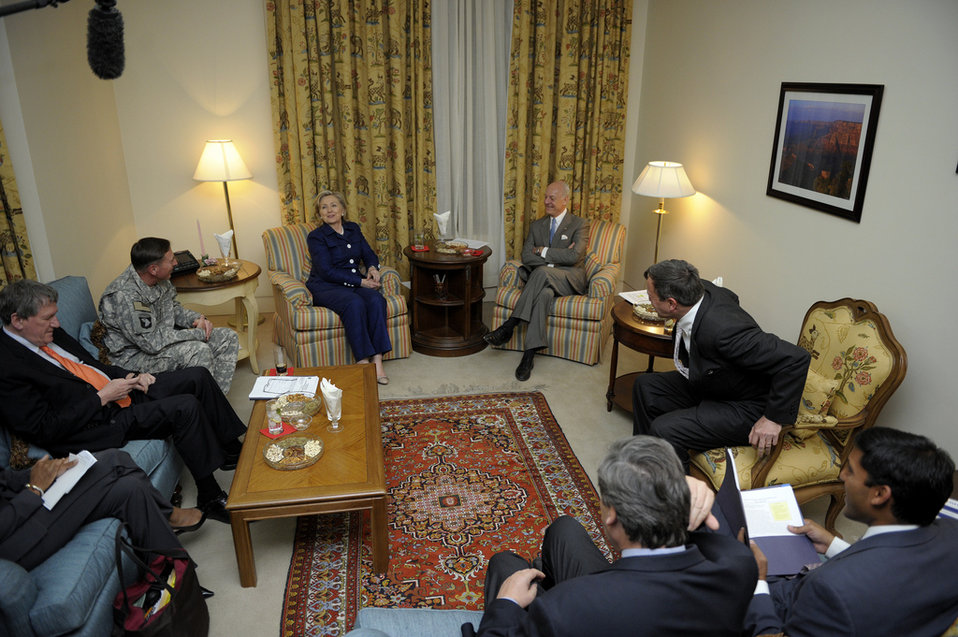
Special Representative Holbrooke, General Petraeus, Secretary Clinton, UN Envoy Stefan di Mistura, Ambassador Eikenberry, and USAID Administrator Shah Gather for a Meeting

(L to R) U.S. Special Representative for Afghanistan and Pakistan Richard C. Holbrooke, U.S. Central Command Commander Gen. David Petraeus, U.S. Secretary of State Hillary Rodham Clinton, UN Envoy to Afghanistan Stefan di Mistura, U.S. Ambassador to Afghanistan Karl Eikenberry, and USAID Administrator Rajiv Shah gather for a private meeting at the U.S. Embassy Kabul in Afghanistan, on July 19, 2010.